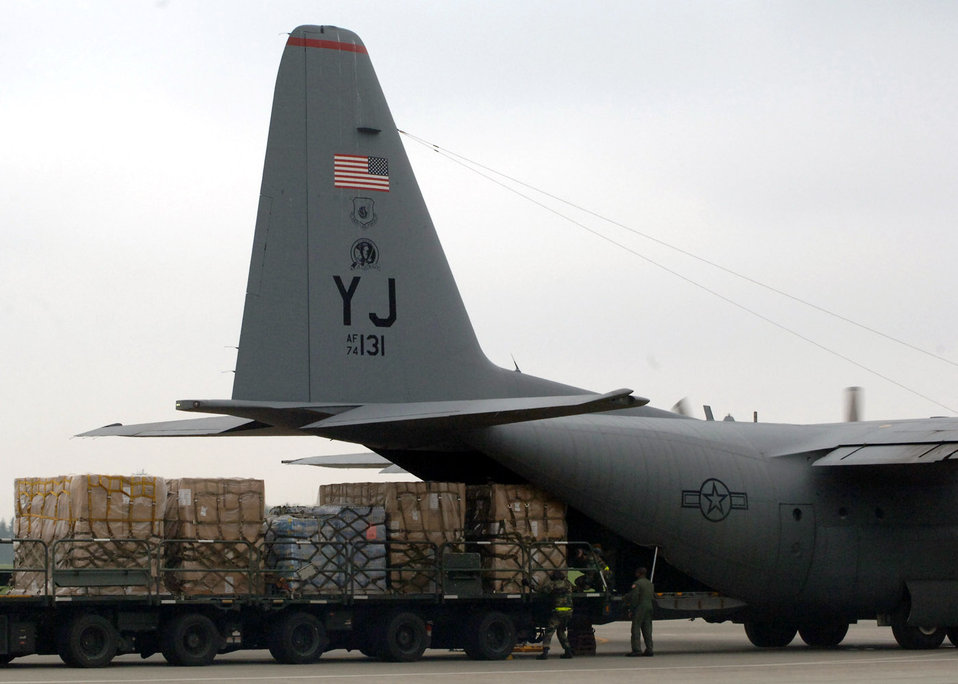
Yokota Airmen aid Japan after earthquake

Airmen from the 374th Airlift Wing and 730th Air Mobility Suqadron load supplies onto a C-130 Hercules for shipment to Niigata Airport July 18 at Yokota Air Base, Japan. The Airmen provided 10,000 pounds of water and 100 air-conditioning units to Japan after an earthquake hit one of Japan's largest city on the Sea of Japan.